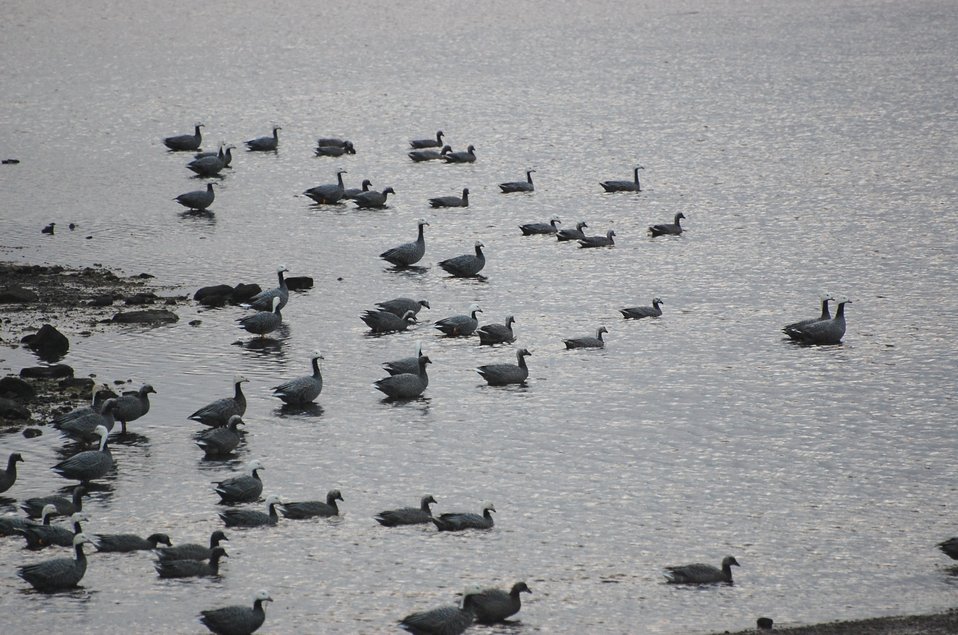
Emperor Geese

Izembek National Wildlife Refuge